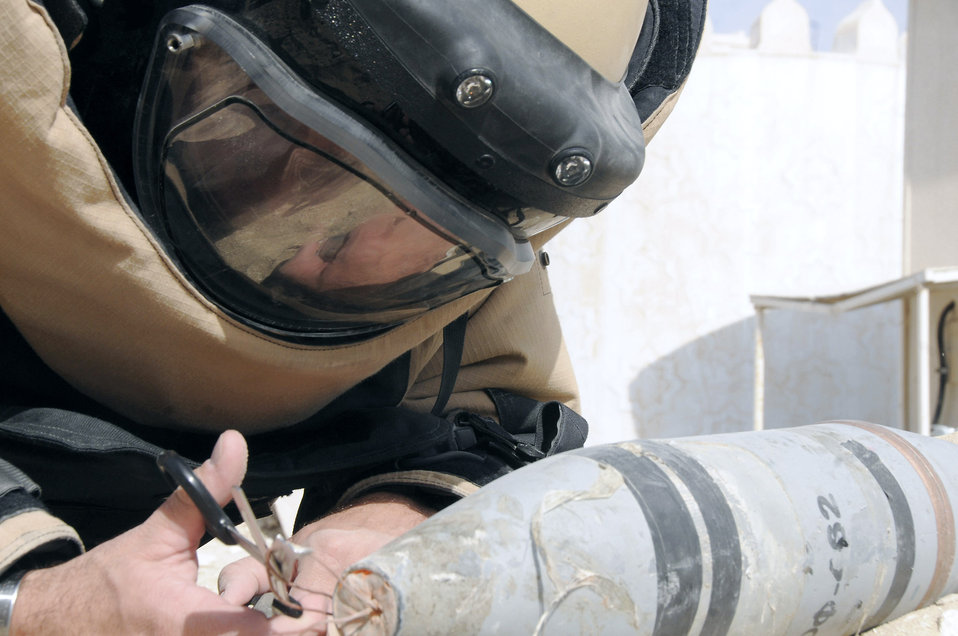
EOD Airmen stay one step ahead of the enemy

Master Sgt. John Beebe clears an improvised explosive device during training Dec. 15 at an air base in Southwest Asia. Sergeant Beebe is the Explosive Ordnance Disposal flight chief assigned to the 379th Expeditionary Civil Engineer Squadron. He is a native of Fort Lauderdale, Fla., and is deployed from Kadena Air Base, Japan.